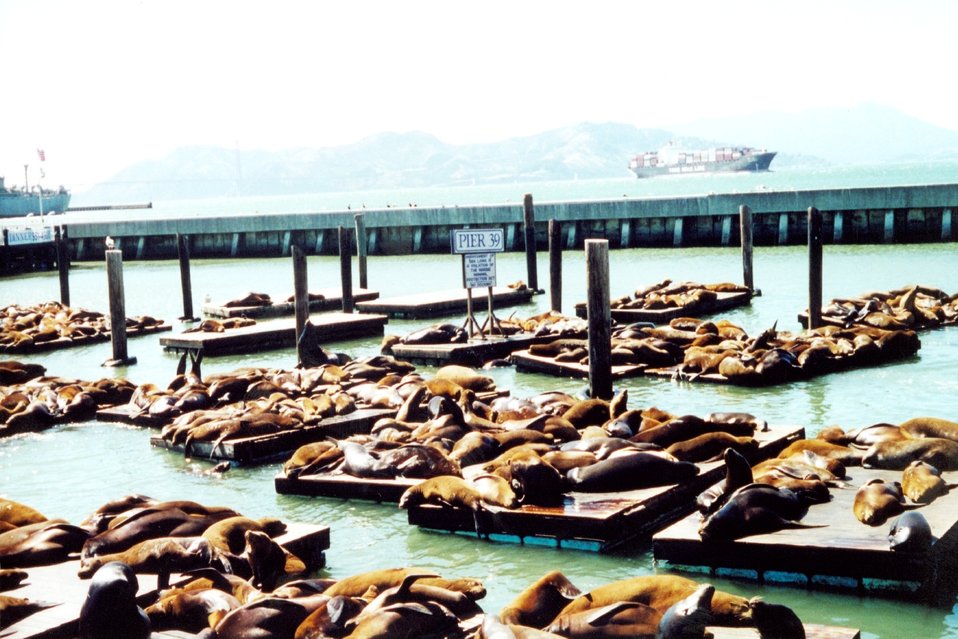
Sea lions lollygagging in the sun near Fisherman's Wharf.